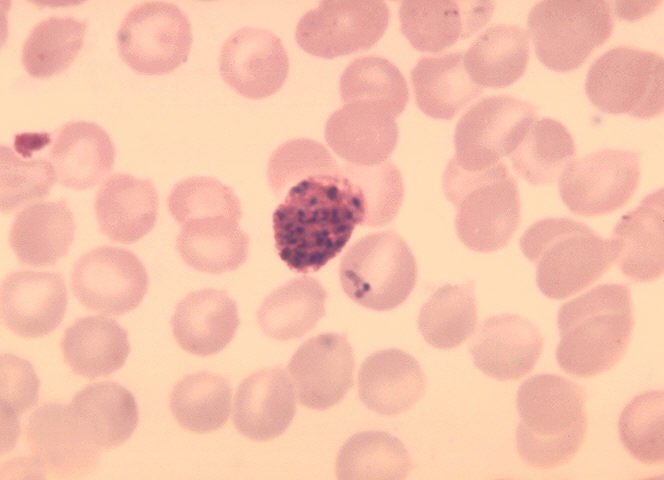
Plasmodium vivax, mature schizont, 24 merozoites.